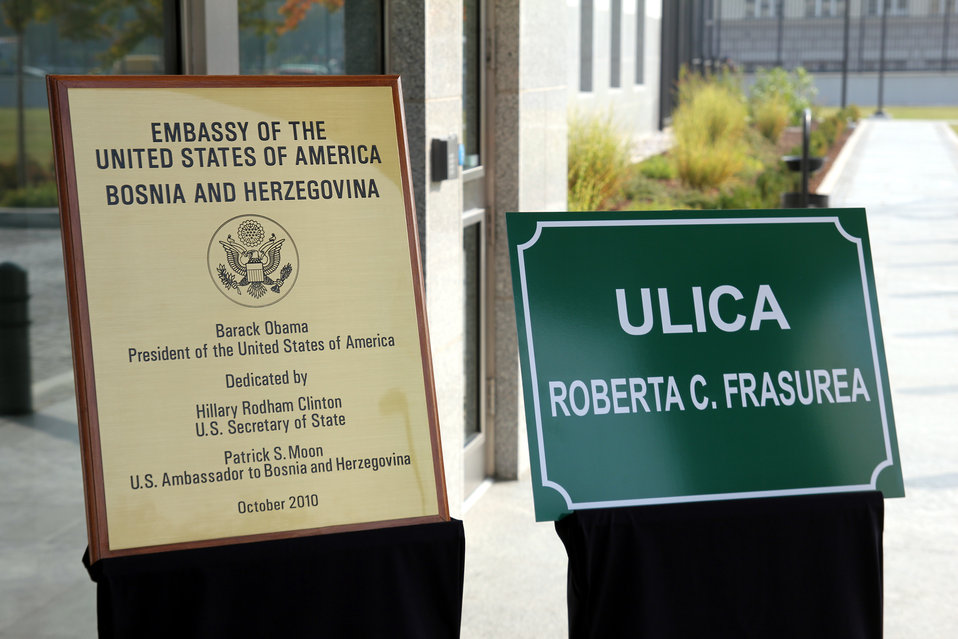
Plaques Are Displayed at the New Embassy Compound in Sarajevo

Plaques are displayed at the dedication of the new embassy compound in Sarajevo, Bosnia and Herzegovina, on October 12, 2010.